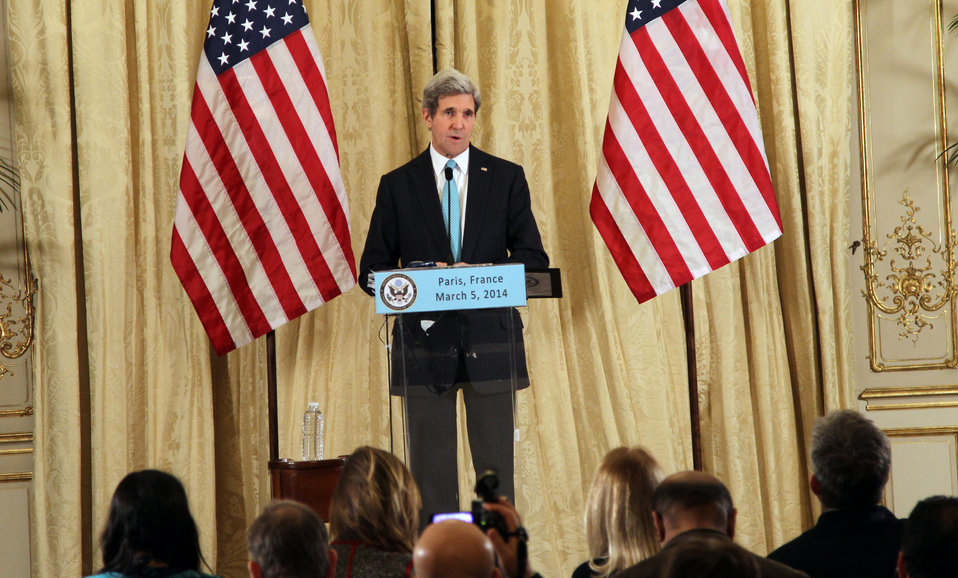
Secretary Kerry Addresses Reporters in Paris

U.S. Secretary of State John Kerry addresses reporters after meetings on Ukraine and Lebanon in Paris, France, on March 3, 2015.